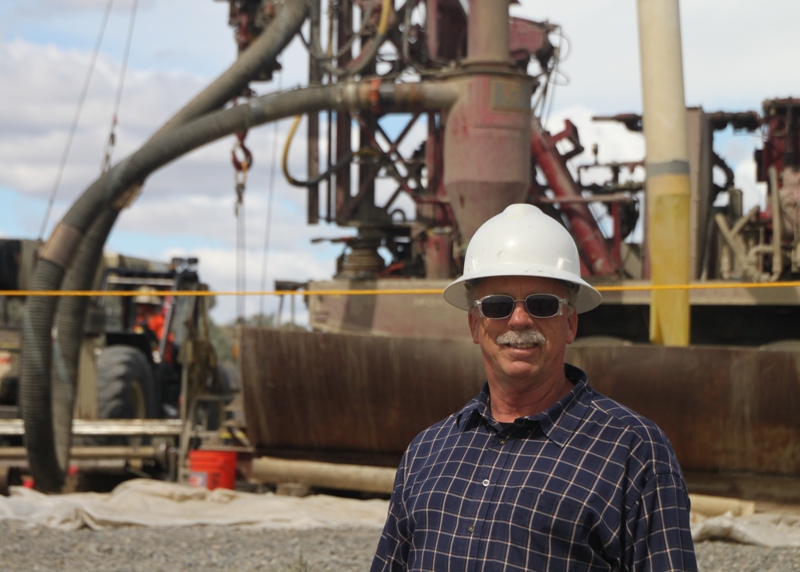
Small Business Owner is Grateful for Opportunity from Recovery Act

Bruce Niermeyer, chief executive officer, Cascade Drilling, L.P.
Washington-based Cascade is a subcontractor to CH2M HILL Plateau Remediation Company, the DOE contractor for environmental cleanup of Hanford’s Central Plateau. Cascade and CH2M HILL’s other subcontractor drilling crews have installed nearly 300 wells since April 2009 to help expand and enhance treatment of contaminated groundwater at Hanford.